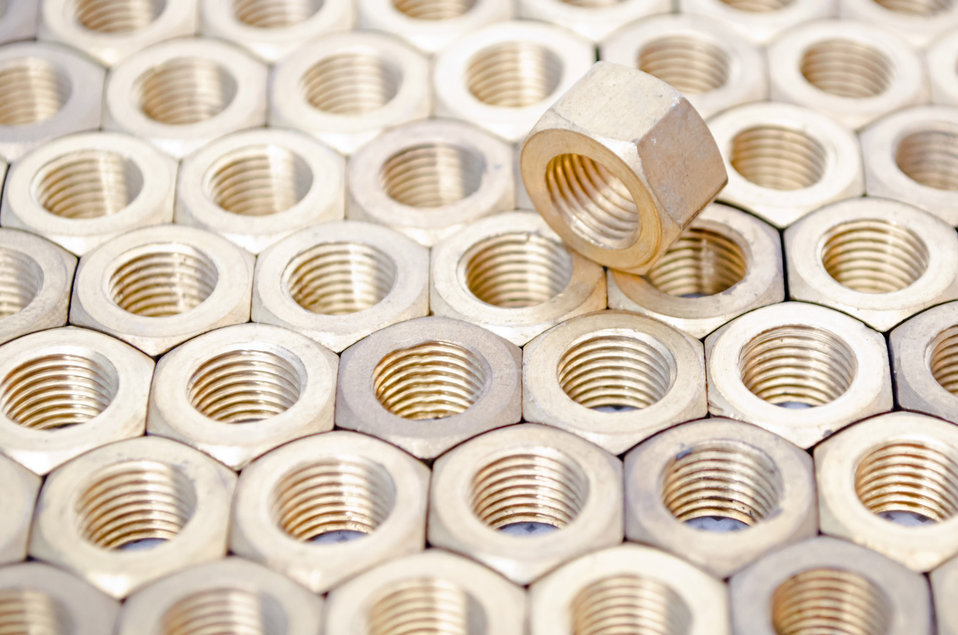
Nuts

Nut background.